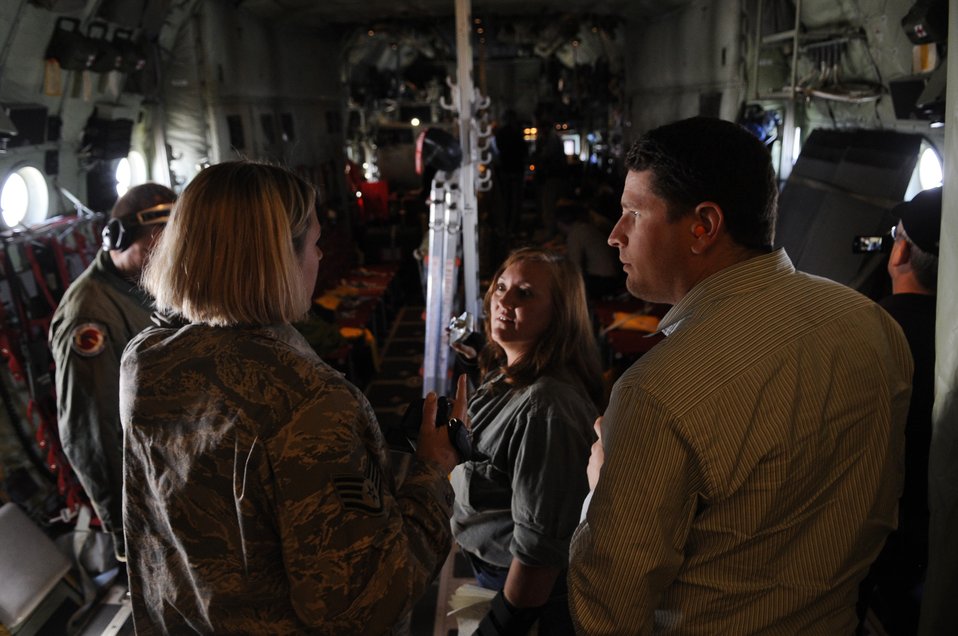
Bloggers Flight with the Hurricane Hunters

A first for the Air Force, military bloggers were invited to fly with the 53rd Weather Reconnaissance Squadron in a WC-130J